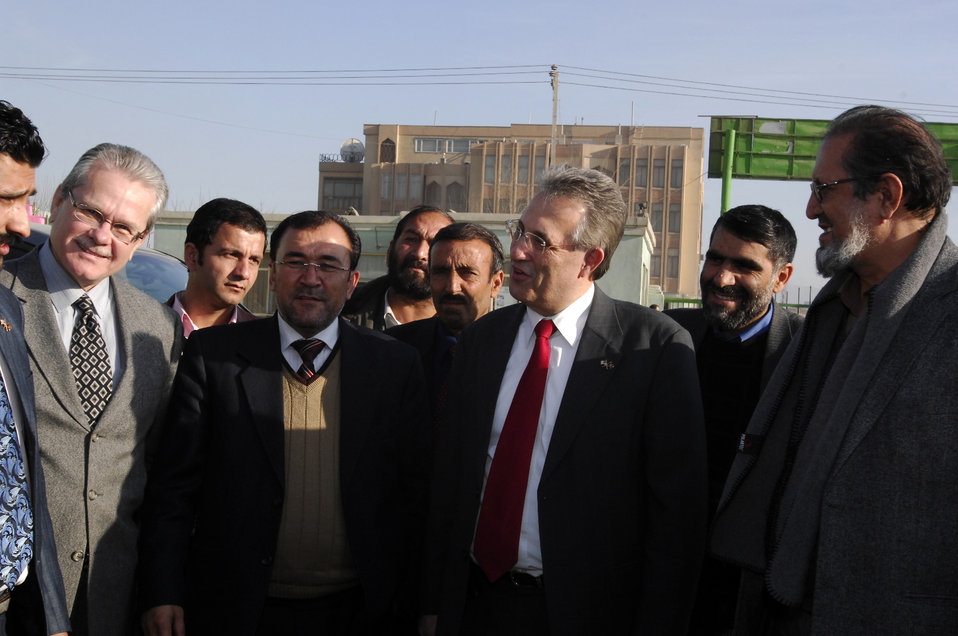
Care79